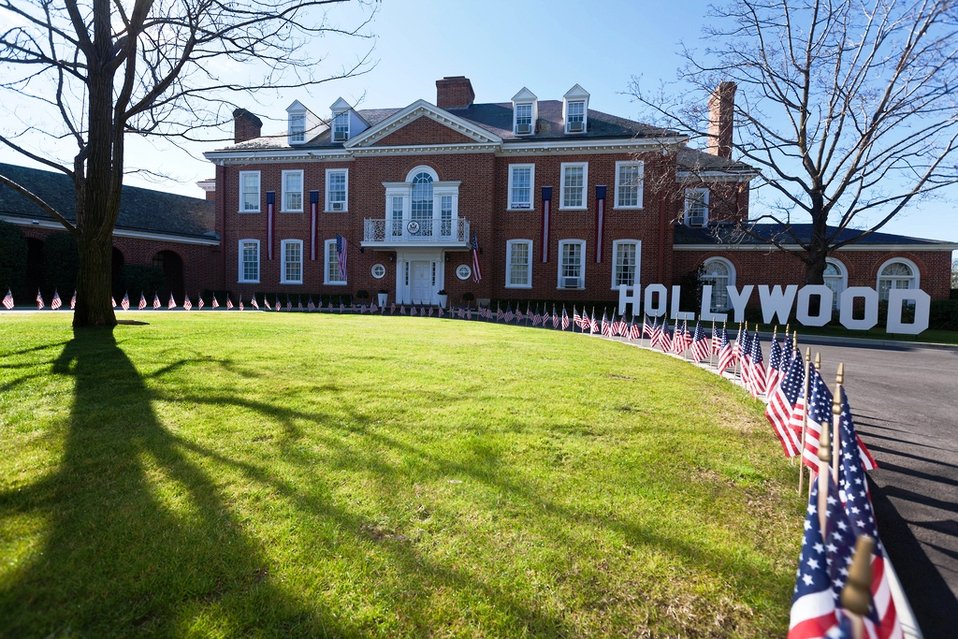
Ambassador Bleich's Residence Is Decorated for the U.S. Independence Day

U.S. Ambassador to Australia Jeffrey L. Bleich's residence is decorated for the 'California Dreamin''-themed U.S. Independence Day celebration on July 1, 2010, in Canberra, Australia.